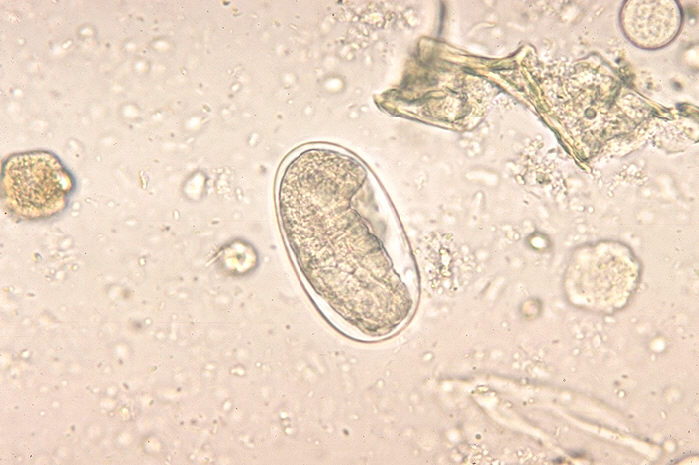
Egg of Strongyloides fulleborni.